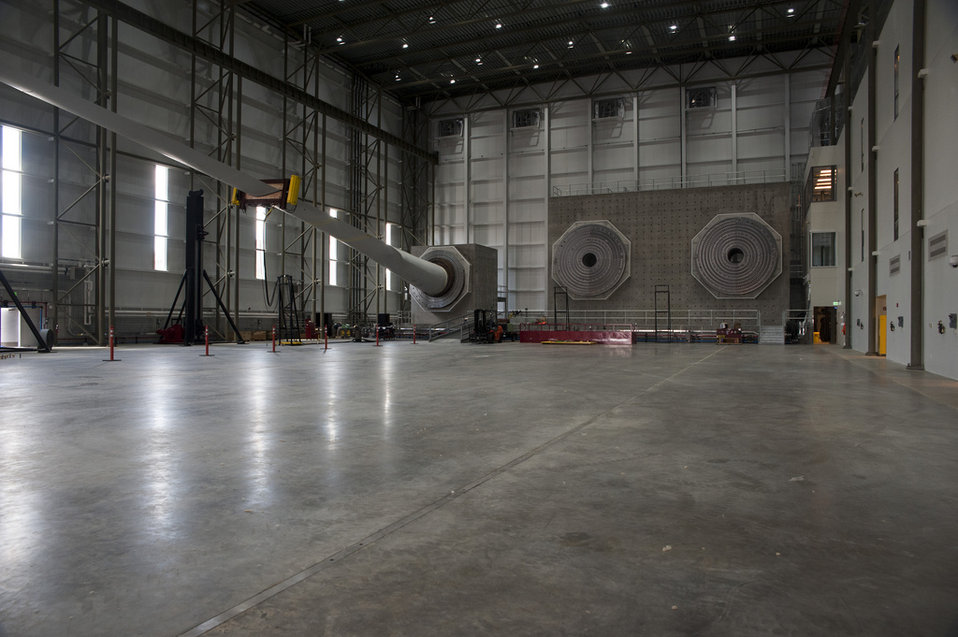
Wind Technology Testing Center - Boston

Wind turbine testing facility in Boston, Massachusetts.